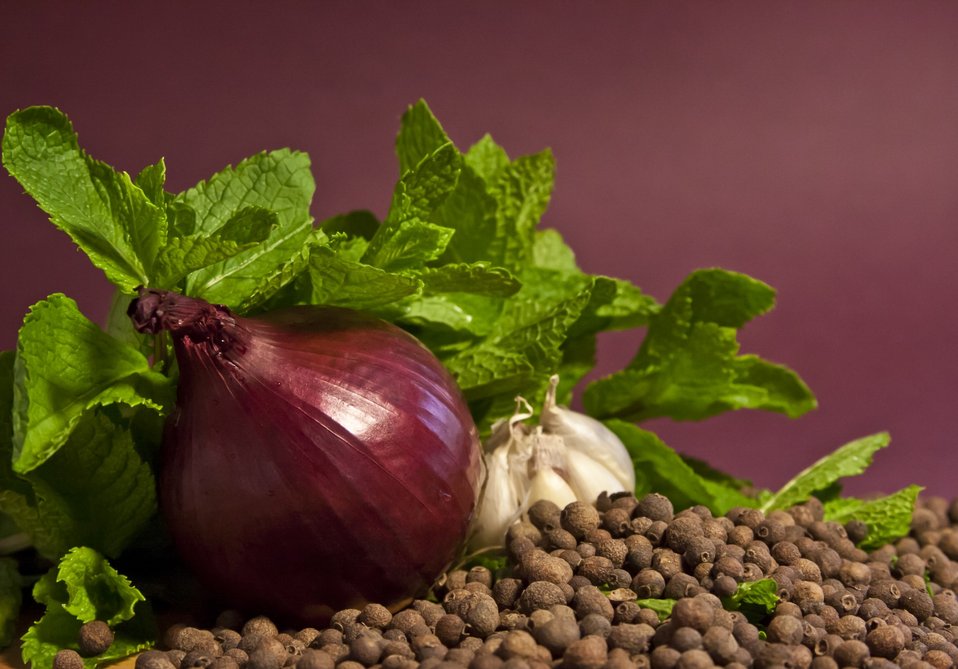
Still life with onions, garlic, sweet peas and greens on a purple background.